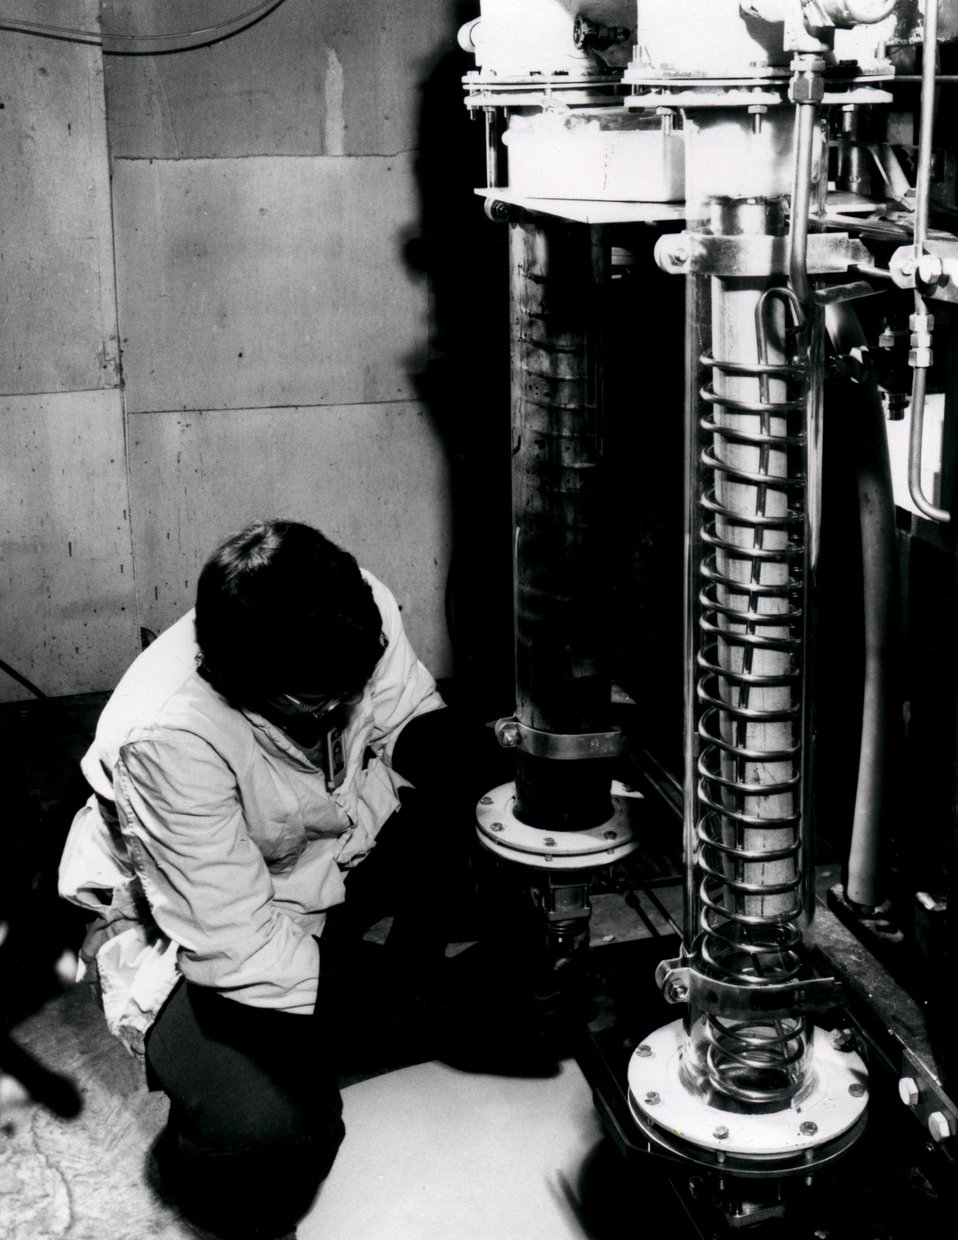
A researcher in the Chemical Technology Division at the U.S. Department of Energy's Oak Ridge National Laboratory samples a collection of coal tars produced in a simulation experiment of underground gasification of western sub-bituminous coal. Circa 1975.